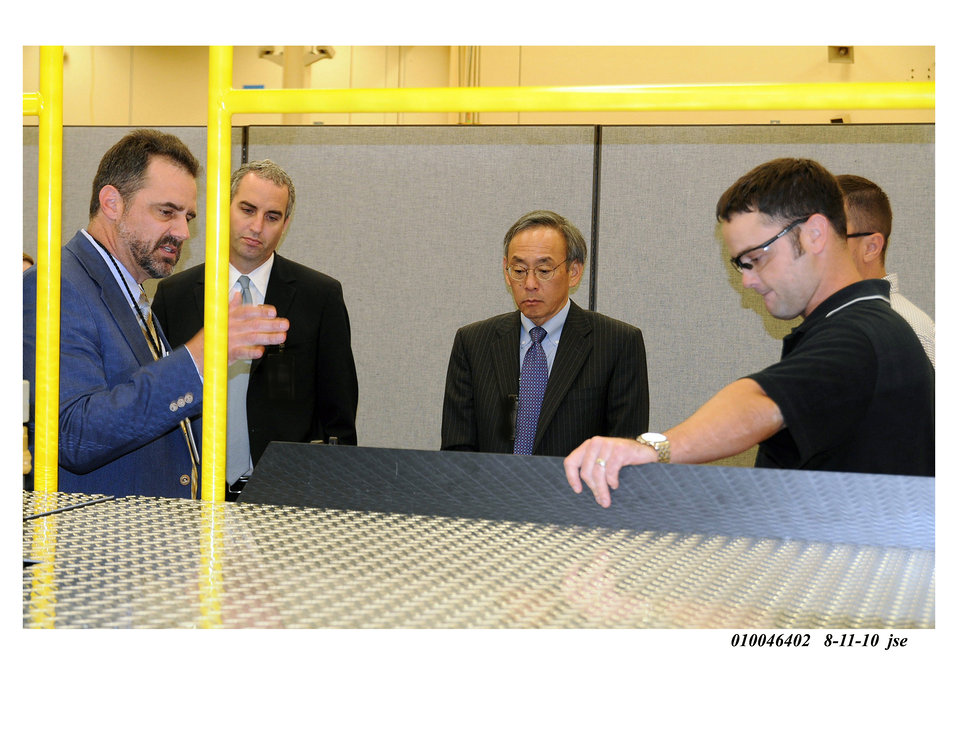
Pantex Plant manager Steve Erhart briefs Secretary Chu on special tools developed for NNSA’s life extension and dismantlement programs during a visit to NNSA’s Pantex Plant. (Aug. 11, 2010)